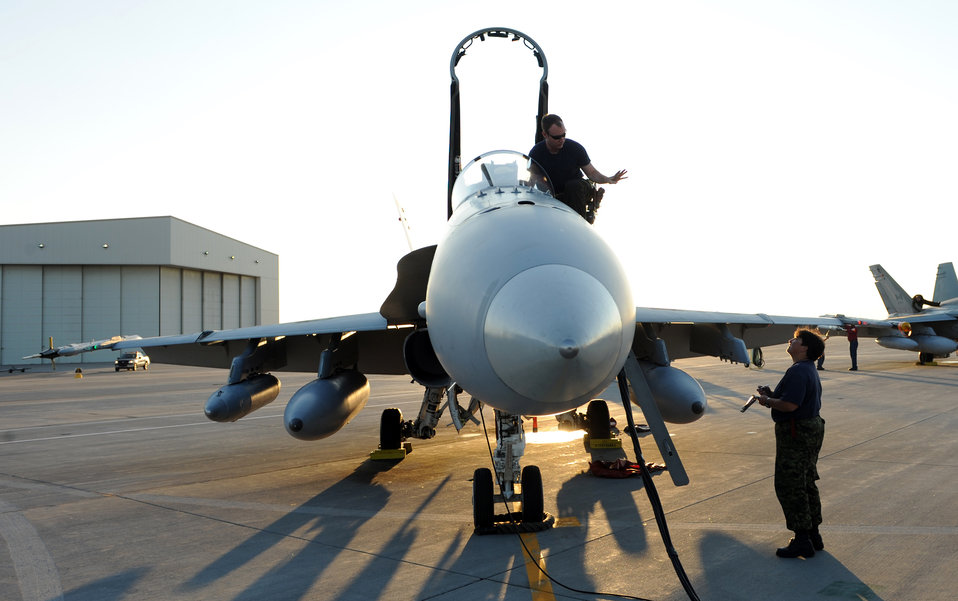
Gunfighter Flag wraps up

Members of the Canadian air force stationed with the 409th Tactical Fighter Squadron at Cold Lake, Alberta, Canada, check the electronic systems in a CF-18 Hornet as part of a pre-flight inspection Sept. 25, 2009, during Gunfighter Flag. The 409th's Hornets participated as friendly ?blue air forces